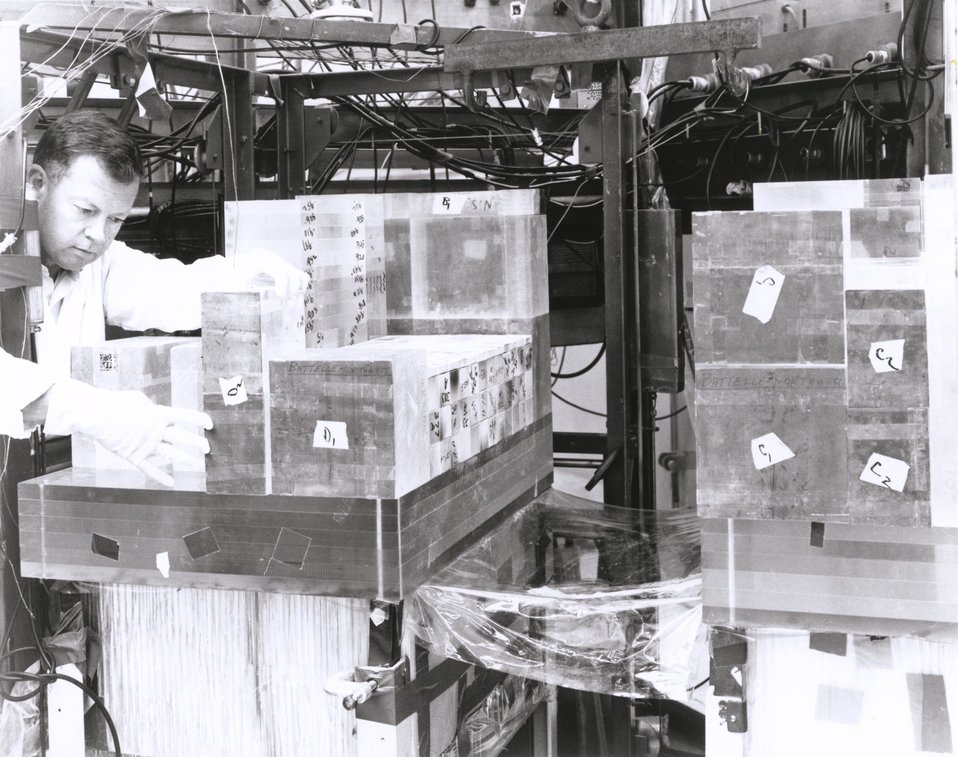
A plutonium-uranium fuel core is shown under assembly on a split-table machine for measurement of its critical mass. c.